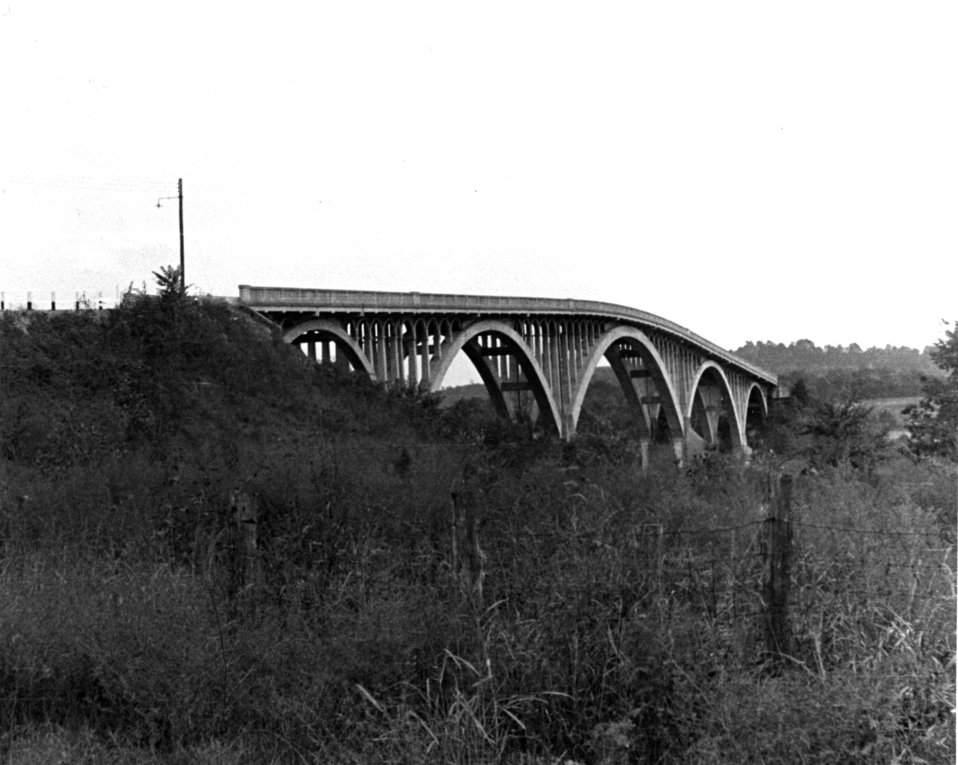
Solway Bridge Oak Ridge

ROLL79-1 DOE photo by Ed Westcott 9-4-1943 Oak Ridge Tennessee